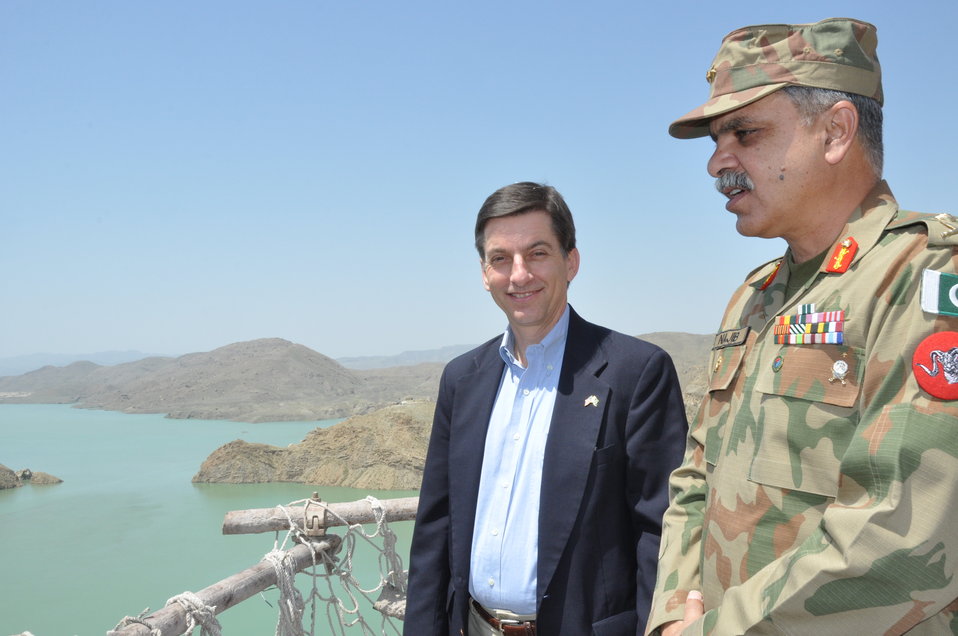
Gomal Zam Dam

April 21, 2011 - USAID’s Pakistan Mission Director Andrew Sisson and Director General of the Frontier Works Organization, Major General Najeeb Ullah Khan, visit the construction work at the Gomal Zam Dam. The United States Agency for International Development (USAID) is providing $40 million to finance the completion of the dam, transmission line, and hydropower components of the project.